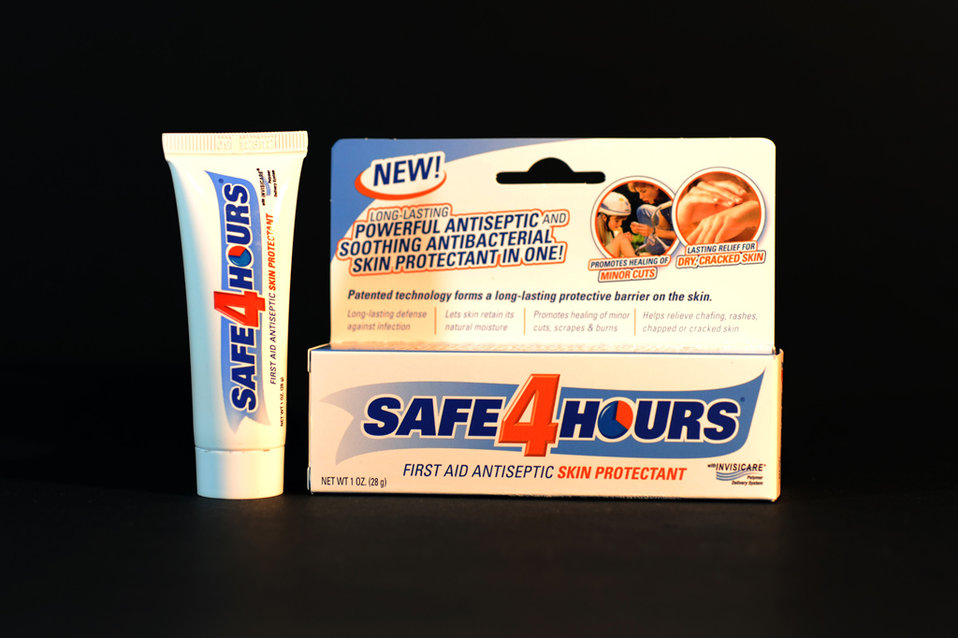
Hand Sanitizers Carry Unproven Claims to Prevent MRSA Infections - Product Photo

This product is effective against MRSA, according to the marketing company’s website. This unproven claim violates federal regulations, says FDA. The agency has warned the company to correct the violations or risk being subject to legal action. Read this FDA Consumer Update: www.fda.gov/ForConsumers/ConsumerUpdates/ucm251816.htm